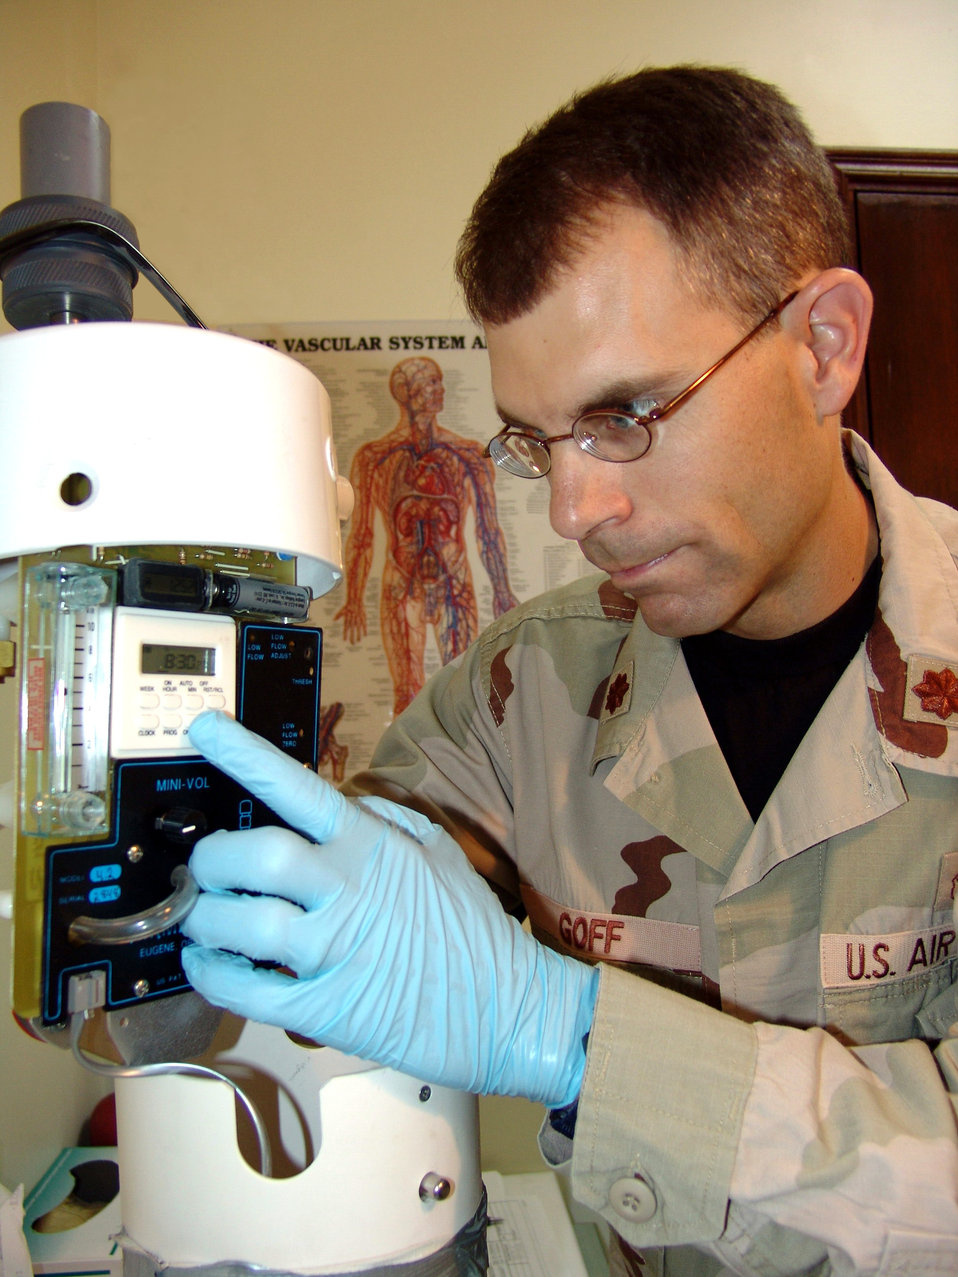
Sample time

SOUTHWEST ASIA -- Maj. Philip Goff resets a timer switch on an air sampler. As a bioenvironmental engineer at a forward-deployed location, Major Goff compiles long-term environmental health data gathered from air samples for the 386th Air Expeditionary Wing. Air sampler collects pathogens, pollen and man-made pollutants that can be measured and documented to predict and prevent illness trends. Major Goff, of the 386th Expeditionary Medical Group, is deployed from McGuire Air Force Base, N.J.